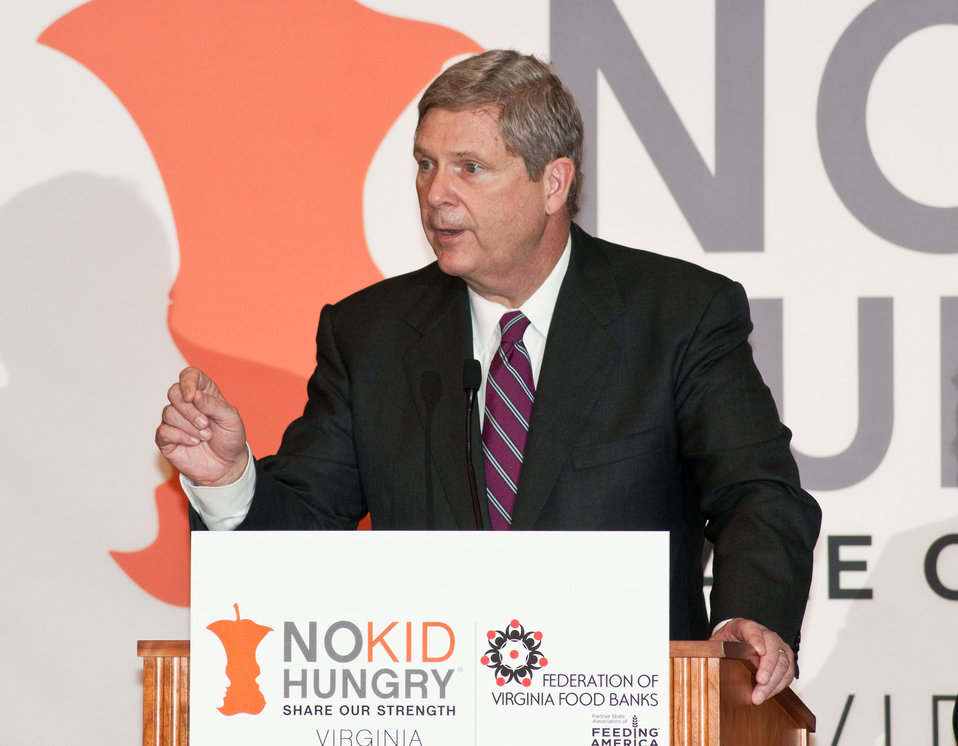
U.S. Department of Agriculture Secretary Tom Vilsack, helped launch the Virginia No Kid Hungry Campaign at Barcroft Elementary School in Arlington, VA, Tuesday, June 7, 2011. Vilsack said, “ We know our strength comes from out partnerships…” Campaign partners include Share our Strength, the Federation of Virginia Food Banks, corporate partners, education leaders, government agencies and community organizations. The Virginia Summer Meals for Kids Program is funded by the USDA and provides free summer meals at hundreds of sites across the Commonwealth of Virginia, but according to a new report released today by the Food Research and Action Center, more than 80 percent of those eligible do not participate. Governor McDonnell announced and stressed that all parents who want free meals for their kids in need, can simply call 211 to find a summer meals site near them.